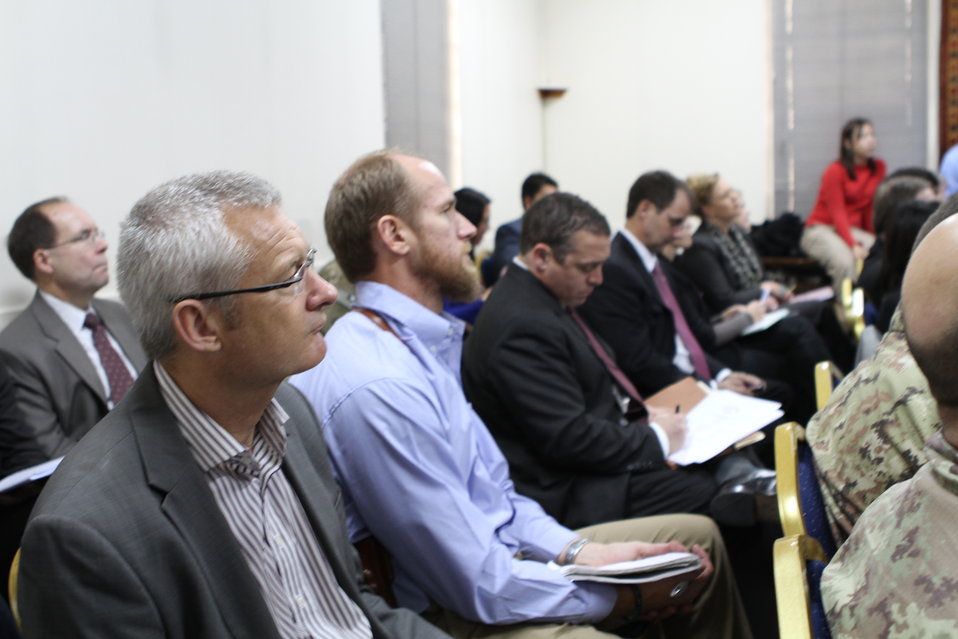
Presentation of the ACTA Civil Society analysis of the FY 1392 Afghan national budget